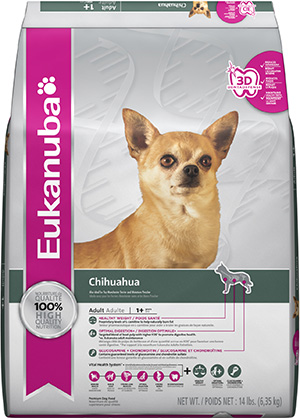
RECALLED – Dog and Cat foods - Dry

August 14, 2013 – Product Recall – P&G Voluntarily Recalls Limited Quantity of Dry Pet Food Due to Possible Health Risk.